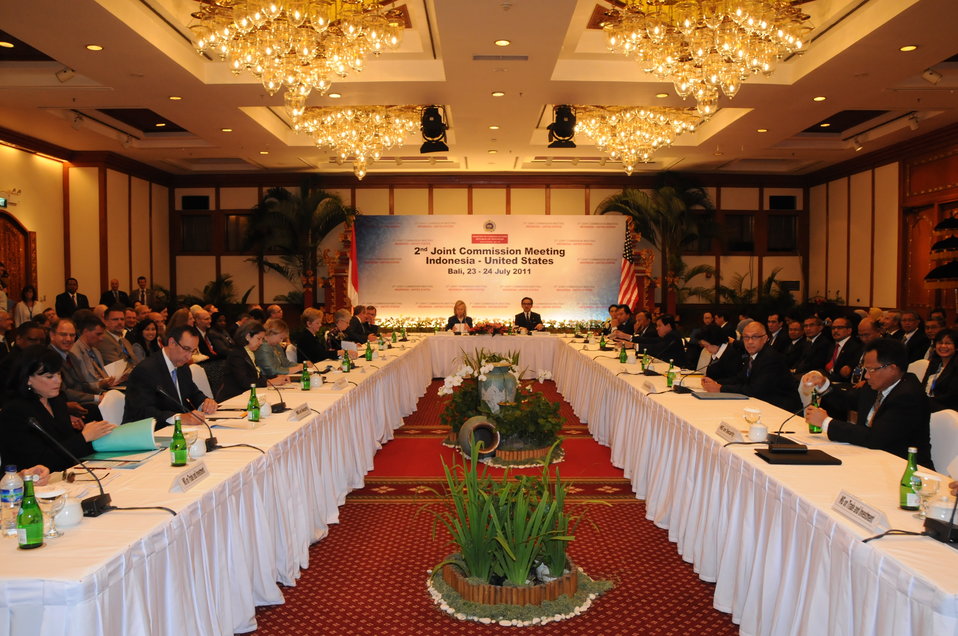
Secretary Clinton and Indonesian Foreign Minister Natalegawa Lead the U.S.-Indonesia Comprehensive Partnership Plenary Session

U.S. Secretary of State Hillary Rodham Clinton and Indonesian Foreign Minister Marty Natalegawa lead the U.S.-Indonesia Comprehensive Partnership Plenary Session in Bali, Indonesia, on July 24, 2011.